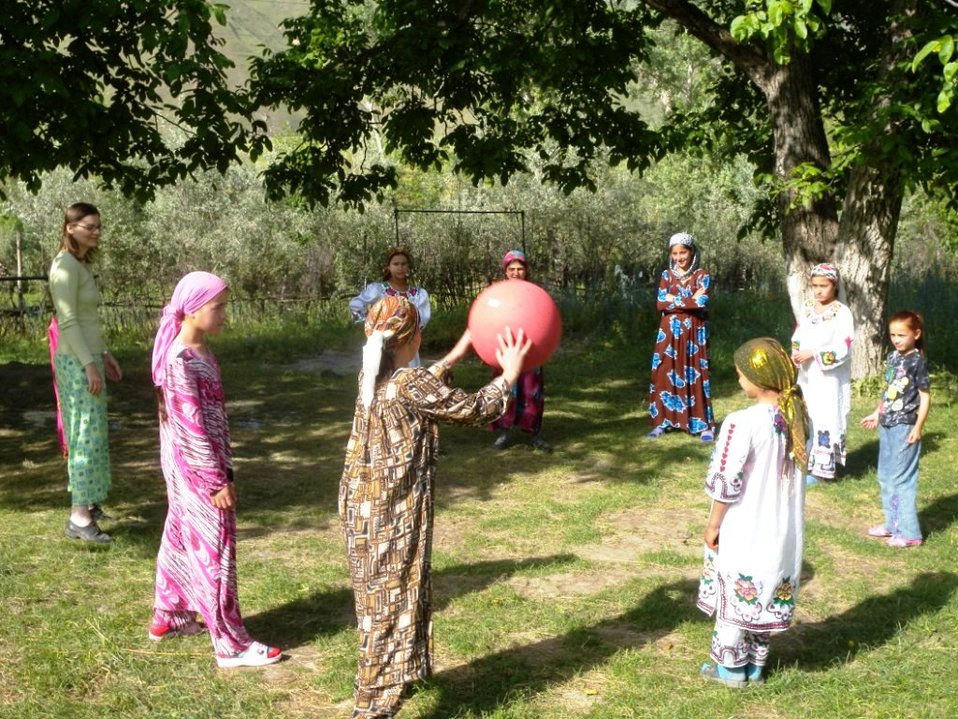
Tajik Youth and Deputy Chief of Mission Quast Play Games

Tajik youth and U.S. Embassy Dushanbe Deputy Chief of Mission Necia Quast play games at Camp America, a U.S. Embassy Dushanbe-supported summer camp, in Hoyt, Tajikistan, in July 2010.